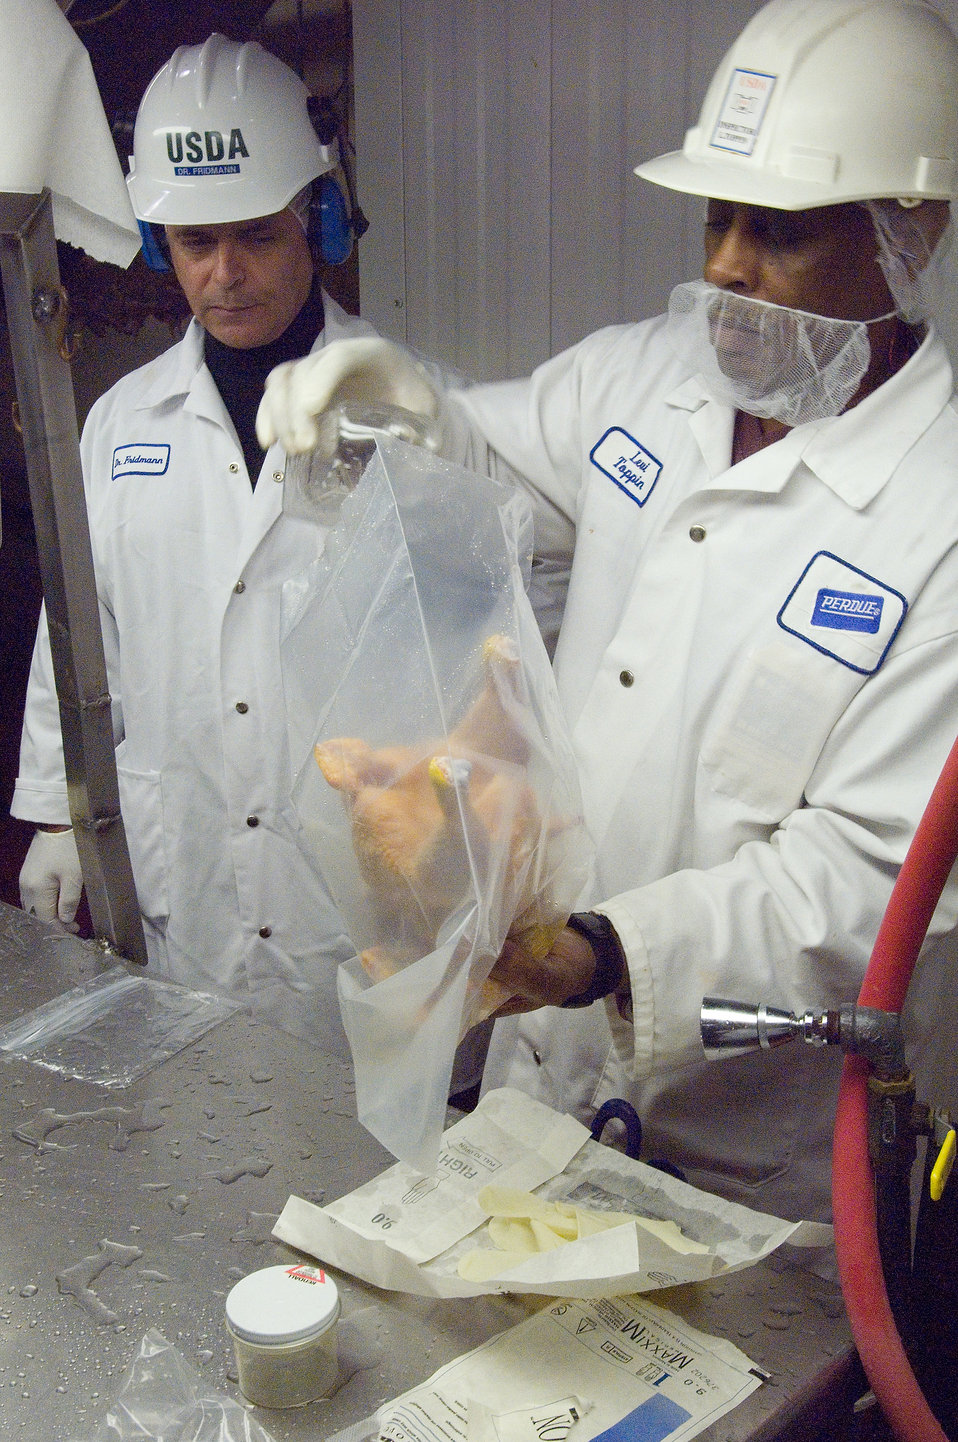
U.S. Department of Agriculture (USDA), Food Safety Inspection Service (FSIS) inspector at a poultry processing facility in Accomac, Virginia checking for cleanliness and testing poultry for the Avian Influenza (AI) virus.